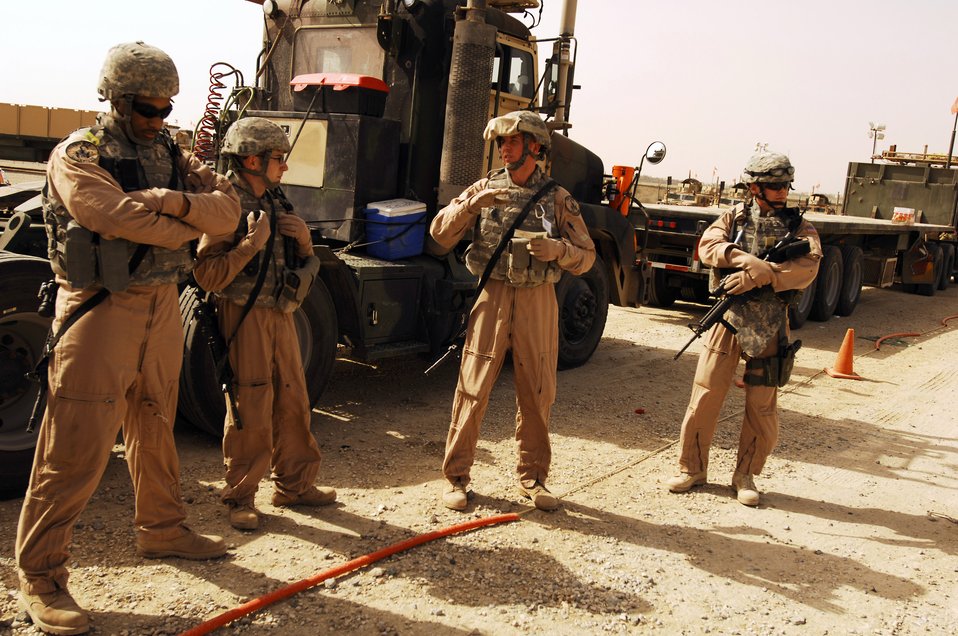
Combat truckers haul cargo through dangerous roads

Tech. Sgt. Scott Neu (center) gives a safety briefing before leading a recent convoy from an Army camp in Southwest Asia. The Airmen of the 70th and 424th Medium Truck detachments assigned to the 586th Expeditionary Logistics Readiness Squadron are in-lieu-of forces supporting the Army support line-haul convoy movements in and out of Iraq. Sergeant Neu is a convoy commander from the 586th ELRS, 70th MTD deployed from Eglin Air Force Base, Fla.